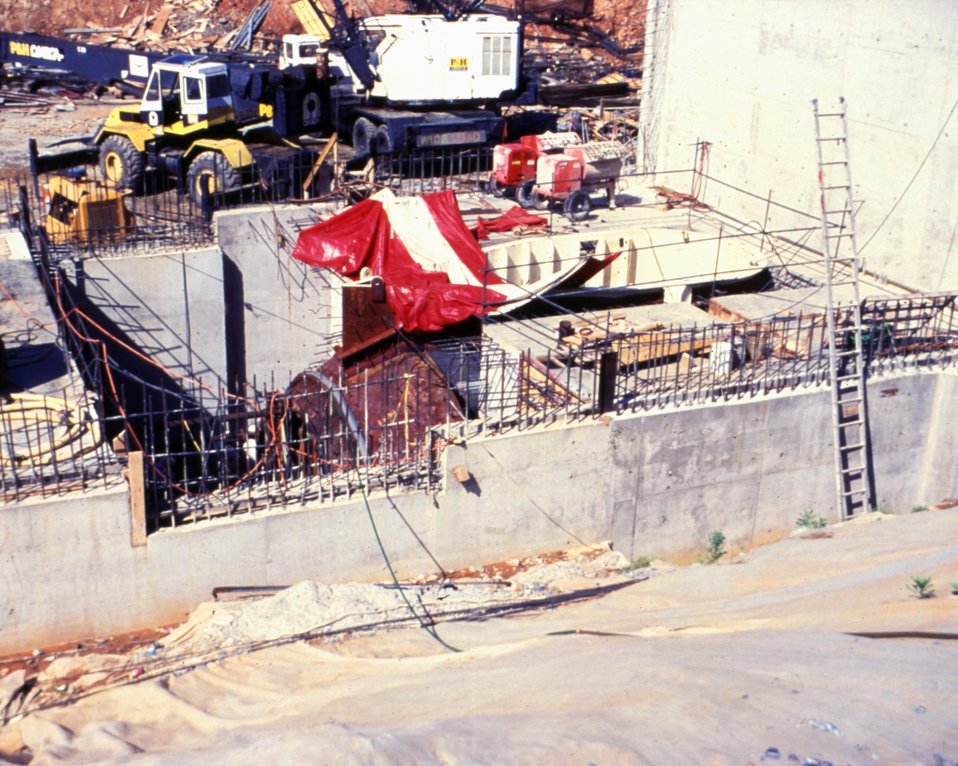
GENERAL VIEW OF POWERHOUSE.

THE DOE SMALL-SCALE HYDROPOWER PROGRAM CONSISTS OF 19 PROJECTS AND DEMONSTRATES THE VIABILITY OF SMALL-SCALE HYDRO-POWER WITH AVAILABLE TECHNOLOGY. THE BROAD RIVER PROJECT, BEGUN IN JANUARY, 1983, WENT ON LINE DECEMBER 27, 1987. UTILIZING ONE OPEN-PIT TUBULAR TURBINE THAT PRODUCES A MAXIMUM OF 4,140 KILOWATTS, THE DAM PROVIDES A GROSS HEAD OF 20.2 FEET WITH AN ANNUAL STREAM FLOW OF 2,472 CFS.